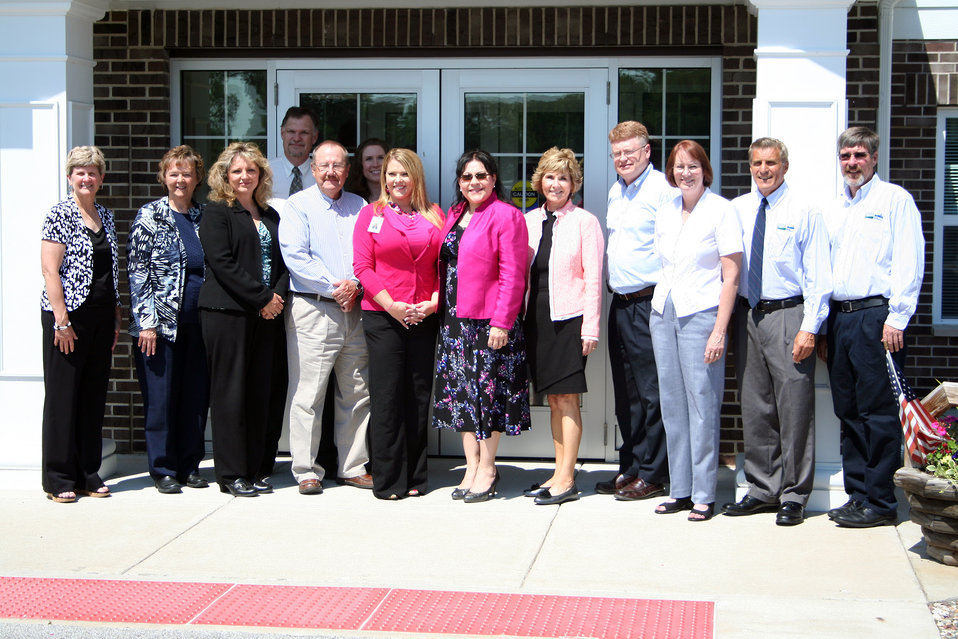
Illinois Hickory Grove Apts Event-55

The new Hickory Grove Apartment complex was built with funding provided through the U.S. Department of Agriculture’s (USDA) Rural Development (RD) Rural Housing Programs. (L to R Illinois RD Area Specialist Diana Belknap, Chief Operating Officer Memorial Hospital Florine Dixon, Chief Financial Officer Memorial Hospital Teresa Smith, Illinois USDA Area Director Dwight Reynolds, Memorial Hospital Human Resources Director Dan Smith, Illinois State Director Assistant Molly Hammond, Hickory Grove Apartments Manager Leia Morrison, USDA RD Rural Housing Administrator Trevino, Illinois RD State Director Colleen Callahan, Illinois RD Housing Programs Director Barry Ramsey, Illinois RD Area Specialist Trish Yeager, Illinois RD Area Specialist Mark Murphy, and Illinois RD Area Specialist Jeff Seefeldt).